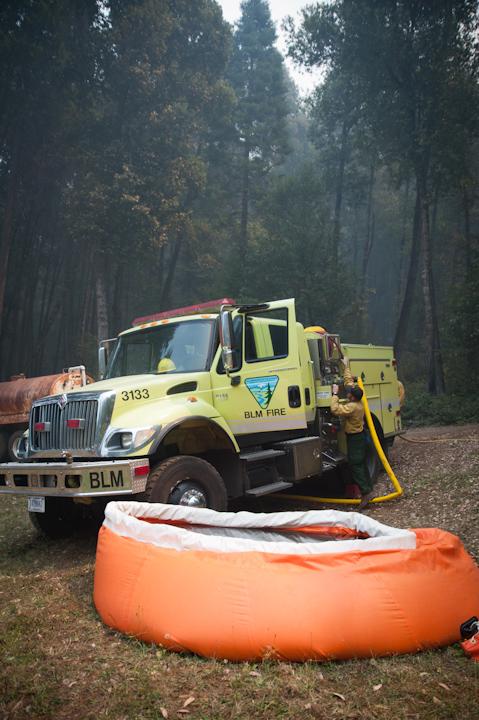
BLM engine 3133 in the Butler Flat area fills a portable tank at the Orleans Complex Fire. The Orleans Fire in the Six Rivers National Forest near New Orleans, CA began on Jul. 29, 2013 is under investigation. The fire has consumed approximately 10,847 acres and is 20% contained.